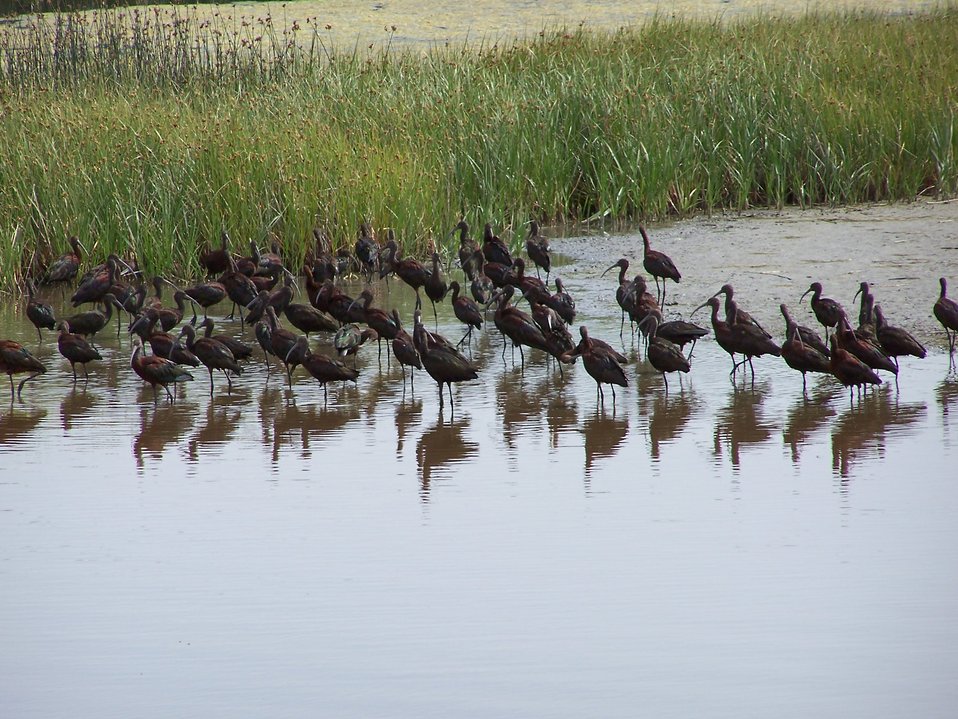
White-faced ibis on Bowdoin NWR